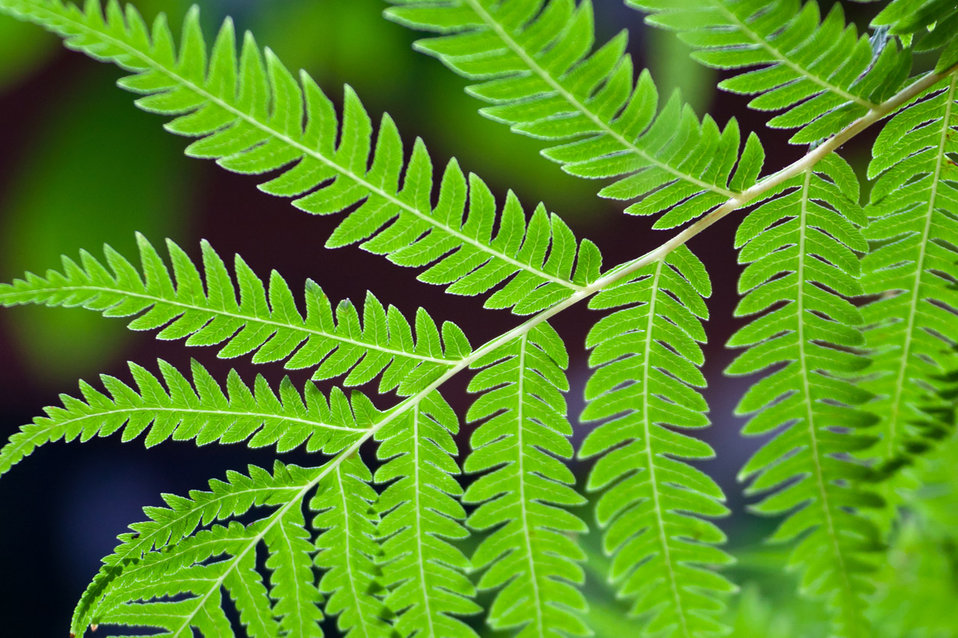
Green leaf closeup

Fresh green leaf on dark background.